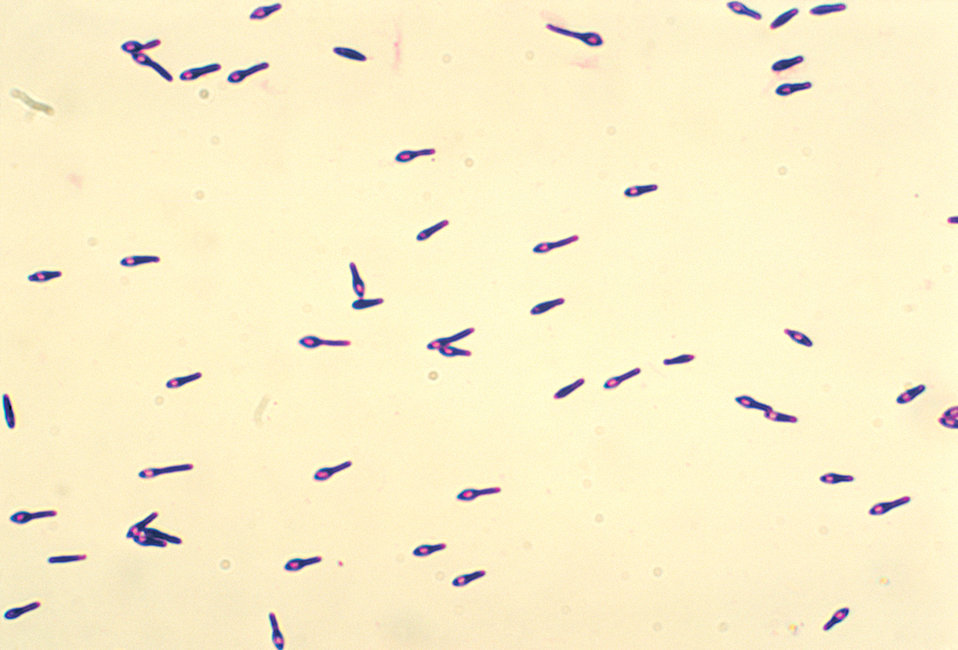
A photomicrograph of Clostridium botulinum type A viewed using a Gram stain technique.